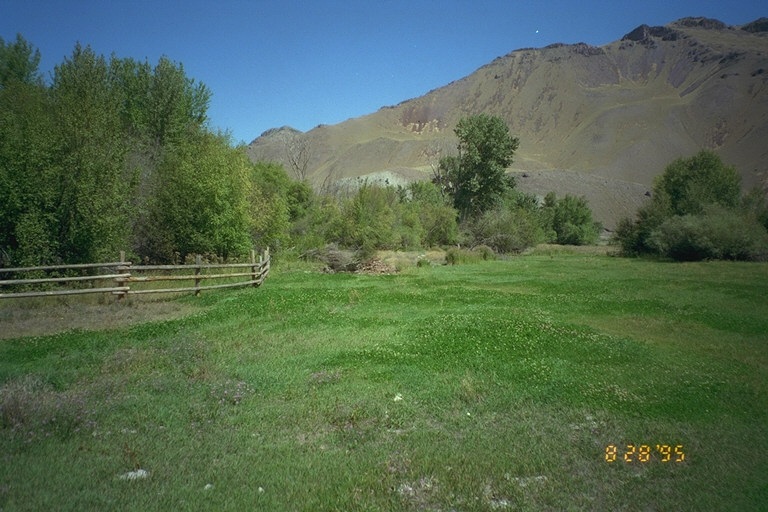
Riparian area Public Lands Salmon Field Office UCSC Upper Columbia Salmon Clearwater District